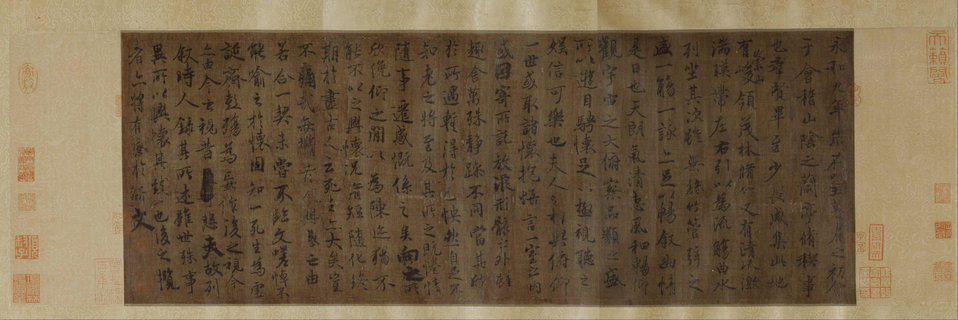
'Lan-ting Xu'Preface to the Poems Composed at the Orchid Pavilion,copy by an artist in the Tang dyna... - Google Art Project